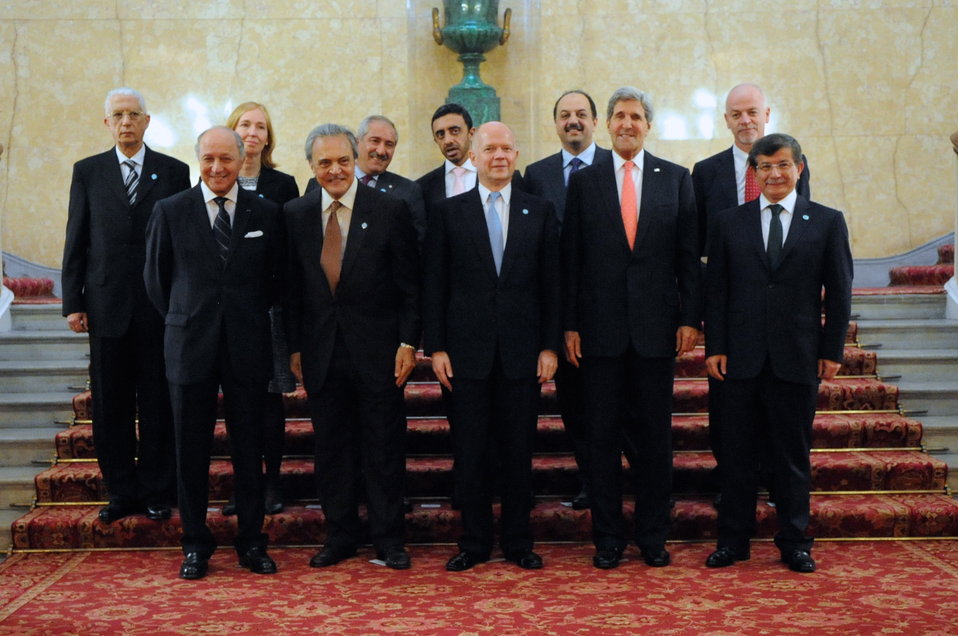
London 11 Groups Meets in London To Discuss Syria

U.S Secretary of State John Kerry poses with his counterparts from Egypt, France, Germany, Italy, Jordan, Qatar, Saudi Arabia, Turkey, and the United Arab Emirates before the London 11 meeting to discuss Syria in London, United Kingdom on October 22, 2013.